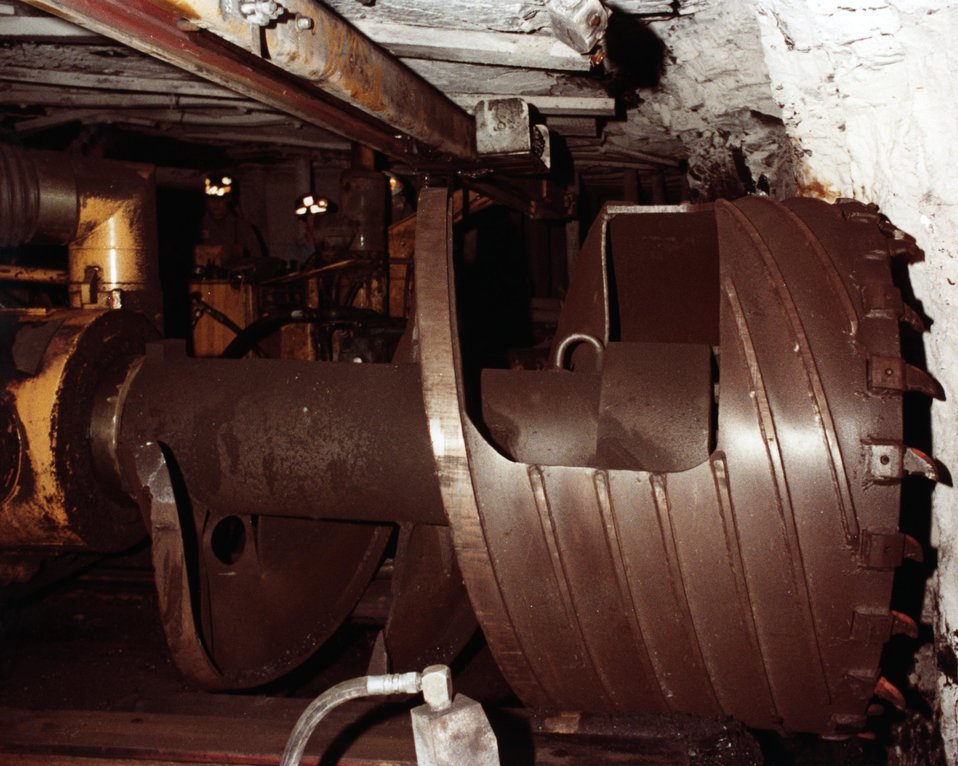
CLOSE-UP OF CUTTER HEAD.

THE BI-DIRECTIONAL AUGER IS BEING DESIGNED TO EXTRACT COAL FROM THE NORMAL SIZE PILLARS LEFT IN ROOM-AND-PILLAR MINING. BY DRILLING INTO TWO PILLARS FROM THE SAME LOCATION, A GREAT DEAL OF THE NONPRODUCTIVE TRAMMING IS ELIMINATED. BY DRILLING MUCH SHORTER BORE HOLES THAN THE PRESENT UNIDIRECTIONAL AUGER, FEWER INTERSECTING HOLES WHICH WANDER INTO ROOF OR BOTTOM ROCK ARE EXPECTED. THE NET RESULT IS A THEORETICAL 40% MORE PRODUCTIVE MACHINE THAN THE UNIDIRECTIONAL AUGER. ALSO, CREW SIZE IS REDUCED BY ONE. PARTLY BECAUSE THE MACHINE IS REMOTELY CONTROLLED AND PARTLY BECAUSE THE AUGER SEGMENTS ARE NOT REMOVED FROM THE MACHINE, THE OPERATION IS MUCH SAFER. DRILLING INTO STANDARD SIZE PILLARS OFFERS A TRUE INCREASE IN RECOVERY.